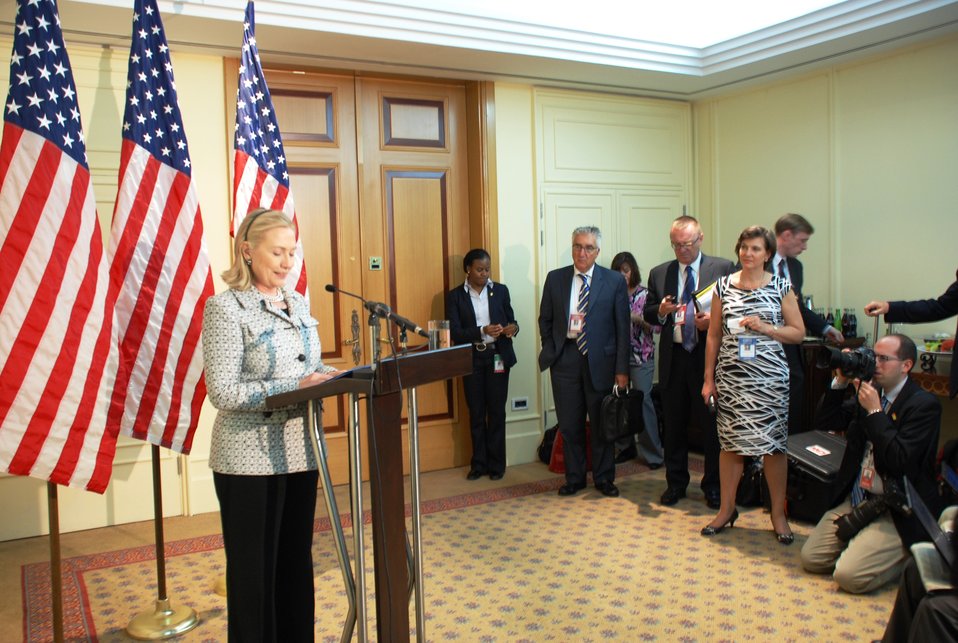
Secretary Clinton Addresses Reporters After Fourth Libya Contact Group Meeting

U.S. Secretary of State Hillary Rodham Clinton addresses reporters after participating in the fourth Libya Contact Group Meeting at the Çırağan Palace in Istanbul, Turkey, on July 15, 2011.